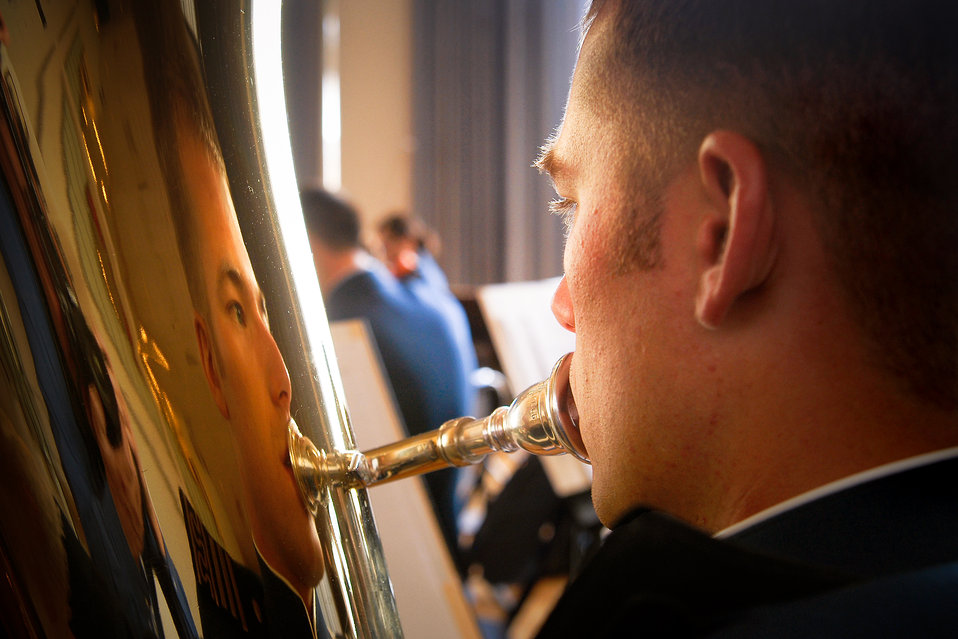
Tuba saluting the sponsors

Air Force Academy Senior Zachariah Thuli plays the tuba during the cadet sponsor social held in Arnold Hall at the U.S. Air Force Academy in Colorado. The social honors the 3,500 cadet sponsors who open their hearts and homes to members of the cadet wing.